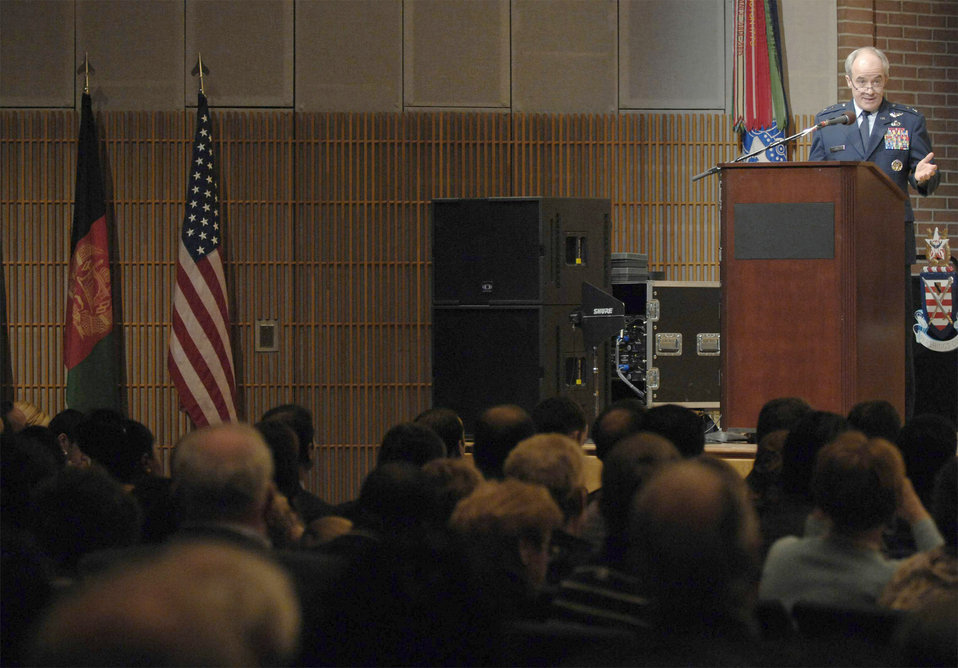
Air Force, families, Kuwaiti ambassador remember Gulf War sacrifices

Maj. Gen. James O. Poss is a guest speaker during the 20th anniversary of the Gulf War remembrance ceremony March 13, 2011, at Joint Base Myer-Henderson Hall in Virginia. General Poss is the Air Force Assistant Deputy Chief of Staff for Intelligence, Surveillance and Reconnaissance.